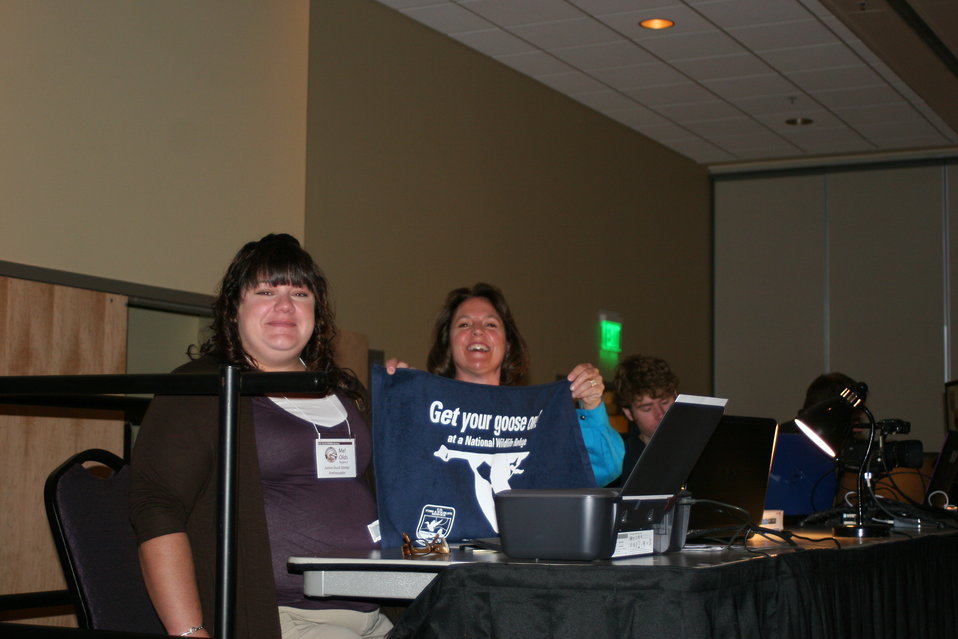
Get your goose on!

Photo Credit: Suzanne Fellows / USFWS
The U.S. Fish & Wildlife Service sponsored the 2012 Federal Duck Stamp Art Contest September 28 and 29 in Ogden, Utah, at Weber State University. A panel of five judges was responsible for choosing the art work used to design the 2013-2014 Migratory Bird Hunting and Conservation Stamp.